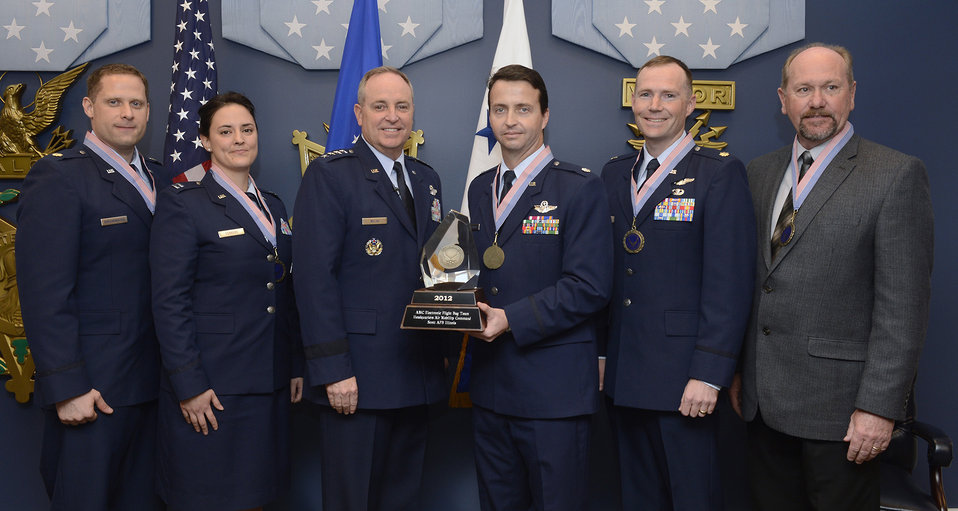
CSAF Team of Excellence awards

Members of the winning team of the 2012 Chief of Staff Team Excellence Award is the AMC Electronic Flight Bag Team From Scott Air Force Base, Ill., are congratulated by Air Force Chief of Staff Gen. Mark A. Welsh III in a Pentagon ceremony on Nov. 27, 2012.